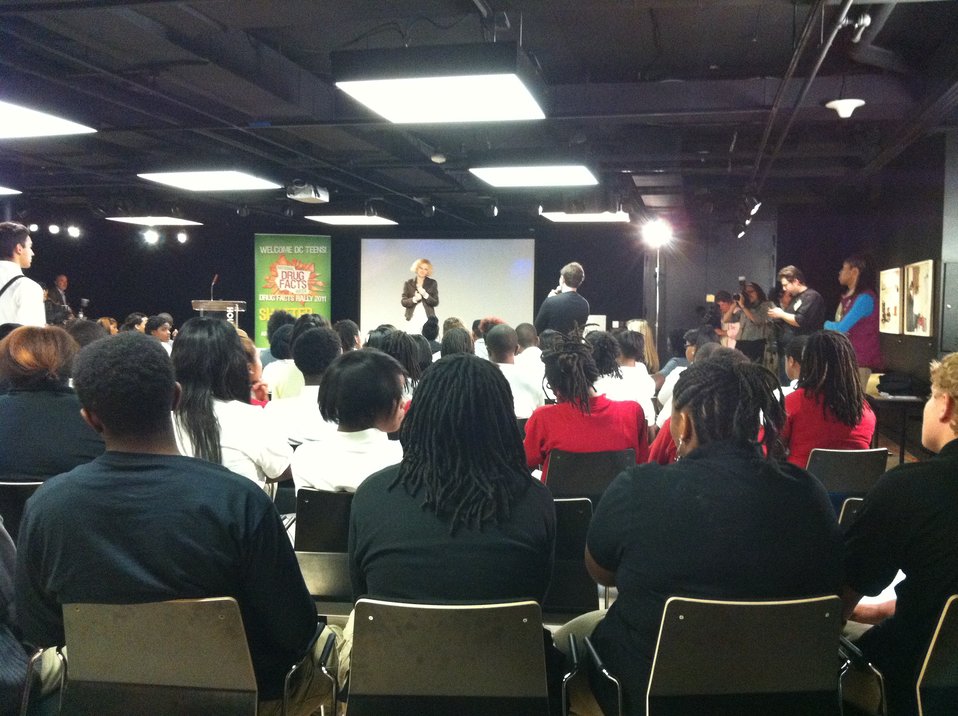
Mentor 5